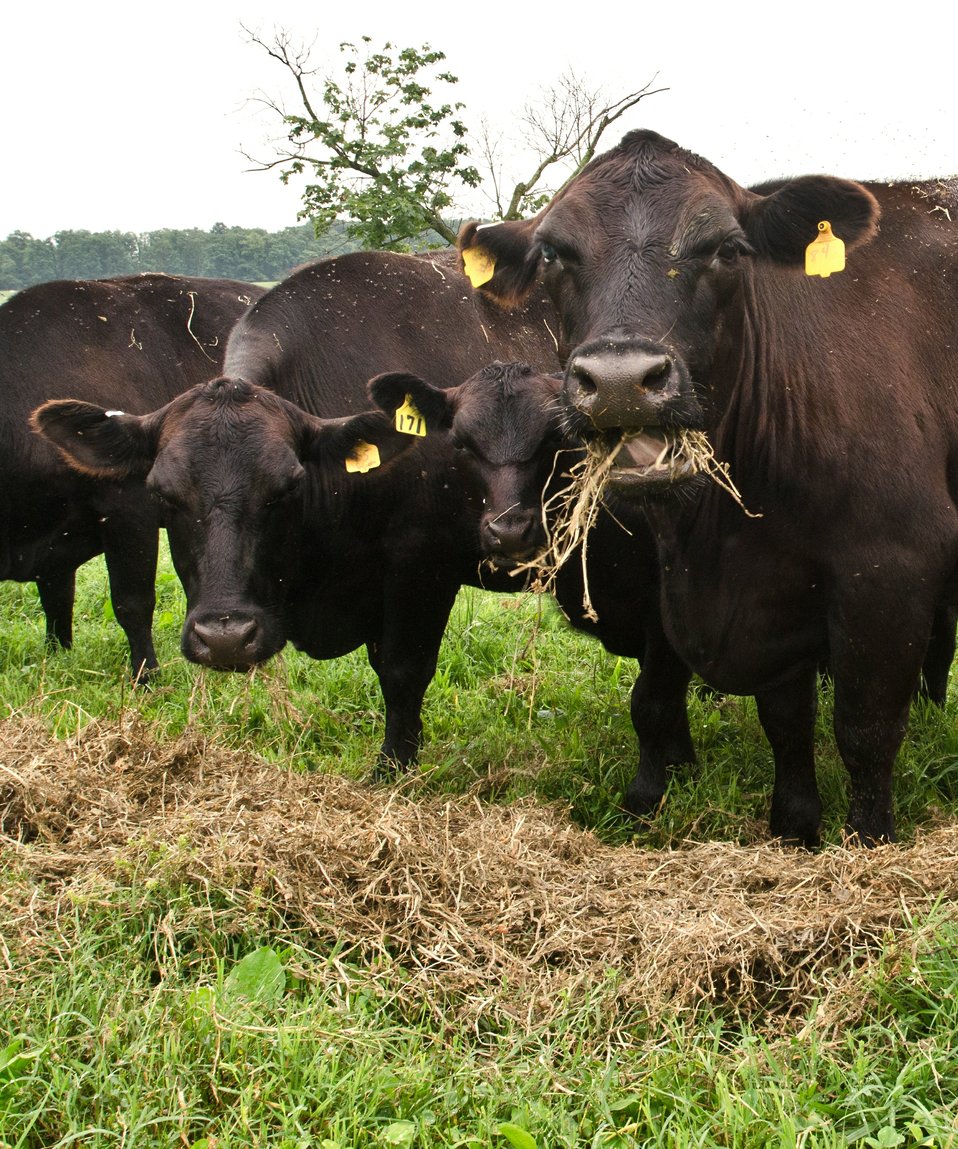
Black Angus cows and calves graze organic pastures, and for added nutrition and variety, they enjoy a daily feeding of sweet silage at Nick’s Organic Farm, owned by Nick Maravell, in Adamstown, MD on Friday, July 12, 2013. The white plastic wrapped bales of pasture grass and alfalfa have been fermenting for months to create sweet silage that stores well and can be used to feed cattle at varying amount all year long. The fermentation process sweetens the taste and increases the vitamin levels. The farm produces Black Angus beef, chicken, turkey, eggs, hay, soybeans, corn, alfalfa, orchard grass, rye; and other crops. The cattle are 100% grass-fed receiving certified organic pasture, certified organic hay (in winter), water and mineral salts mixed with sea kelp. The cattle are not fed hormones, antibiotics or animal products. Poultry feed from grain is ground from organic grain. The poultry also graze on organic pastures. The farm has conducted on-farm research with federal, state and non-profit agencies to refine organic practices. An organization such as the U.S. Department of Agriculture (USDA) Agricultural Research Service (ARS) center in Beltsville has been able to conduct research to improve organic crops and to breed and manage the cattle so that they have.